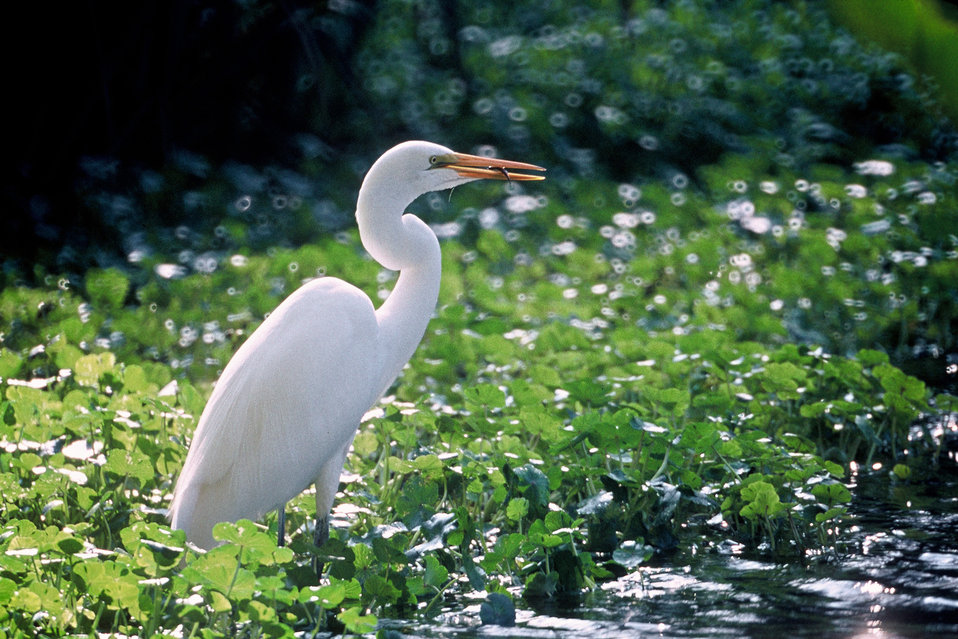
Great Egret.